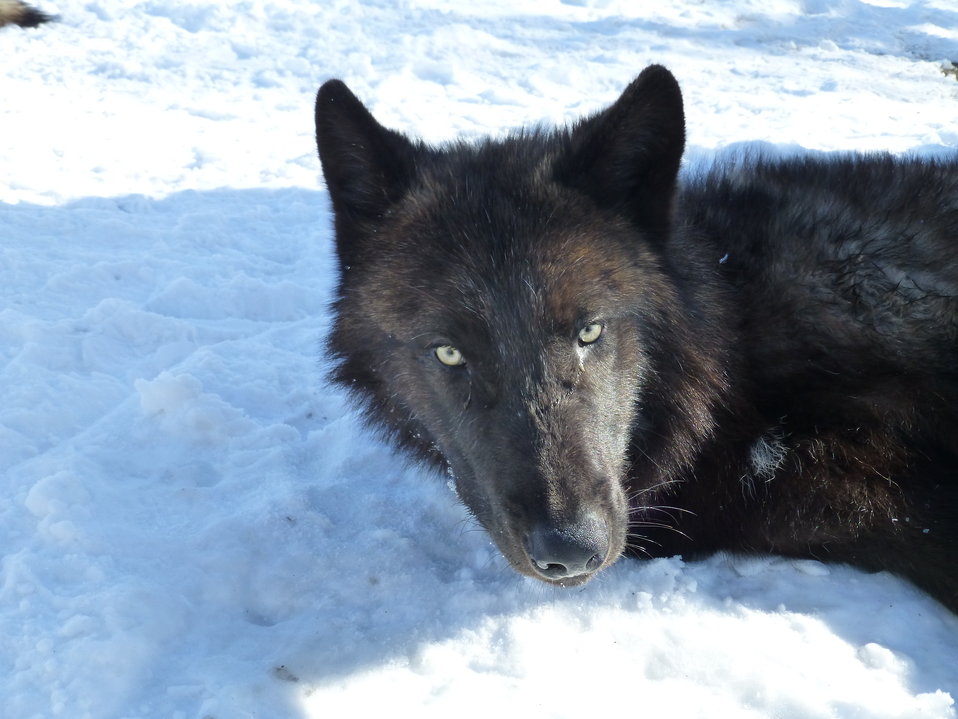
A First For This Pack

This pup was noteworthy as the Pinnacle Peak pack has not previously had any black wolves in the group.